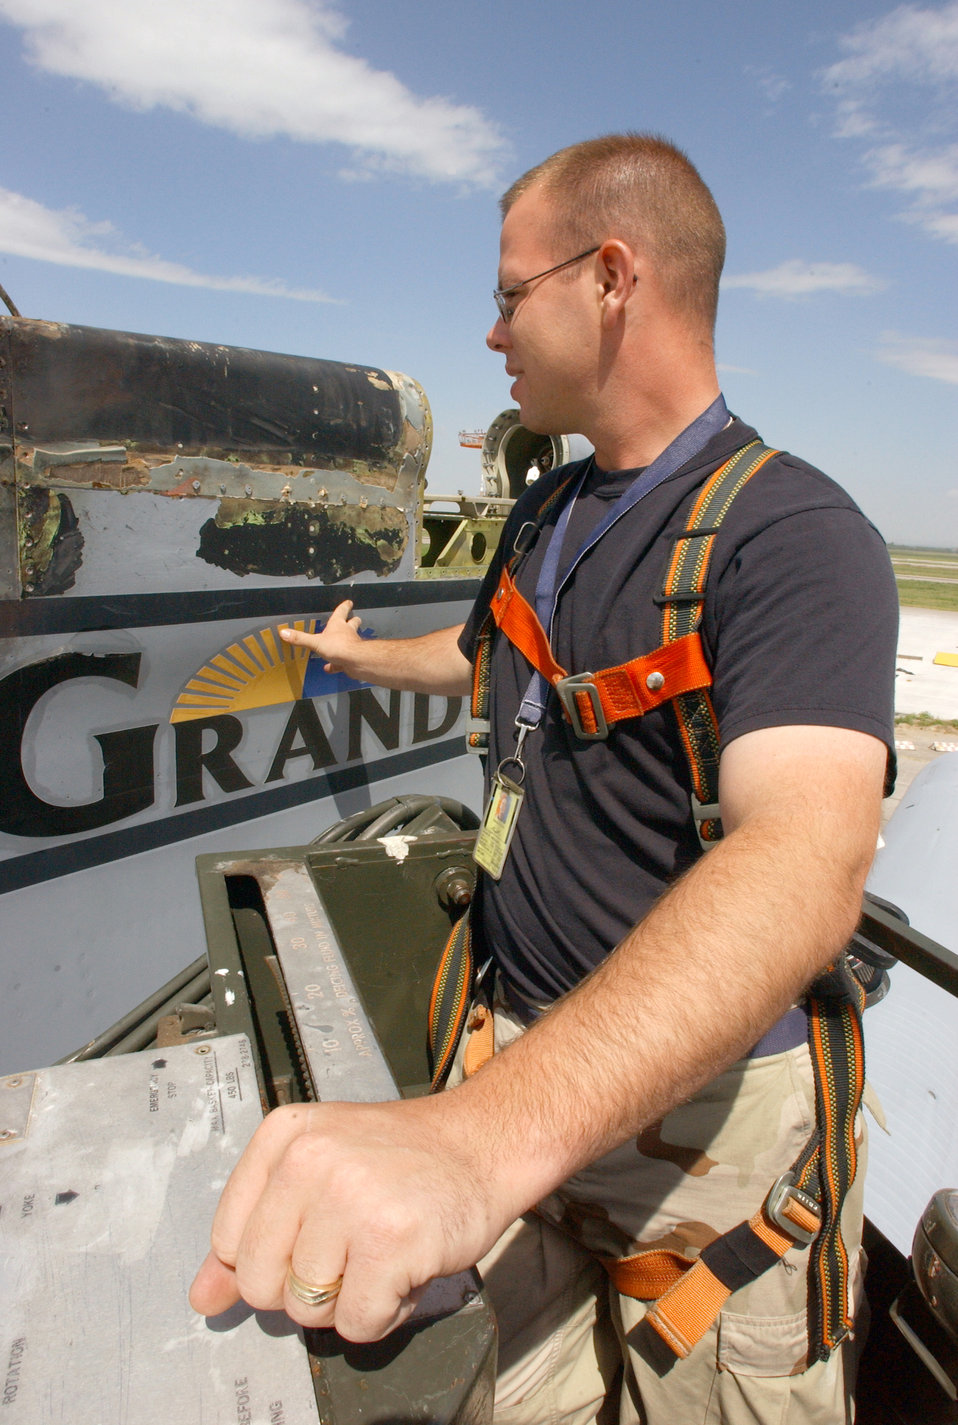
Lightning never strikes twice?

GANCI AIR BASE, Kyrgyzstan (AFPN) -- Senior Airman Greg Monroe uses a hoist to inspect lightning damage to the tail of a KC-135 Stratotanker here Aug. 5. The aircraft was struck by lightning twice during its landing approach to Manas International Airport on Aug. 4. Monroe and the tanker are part of the 376th Expeditionary Air Wing supporting Operation Enduring Freedom.